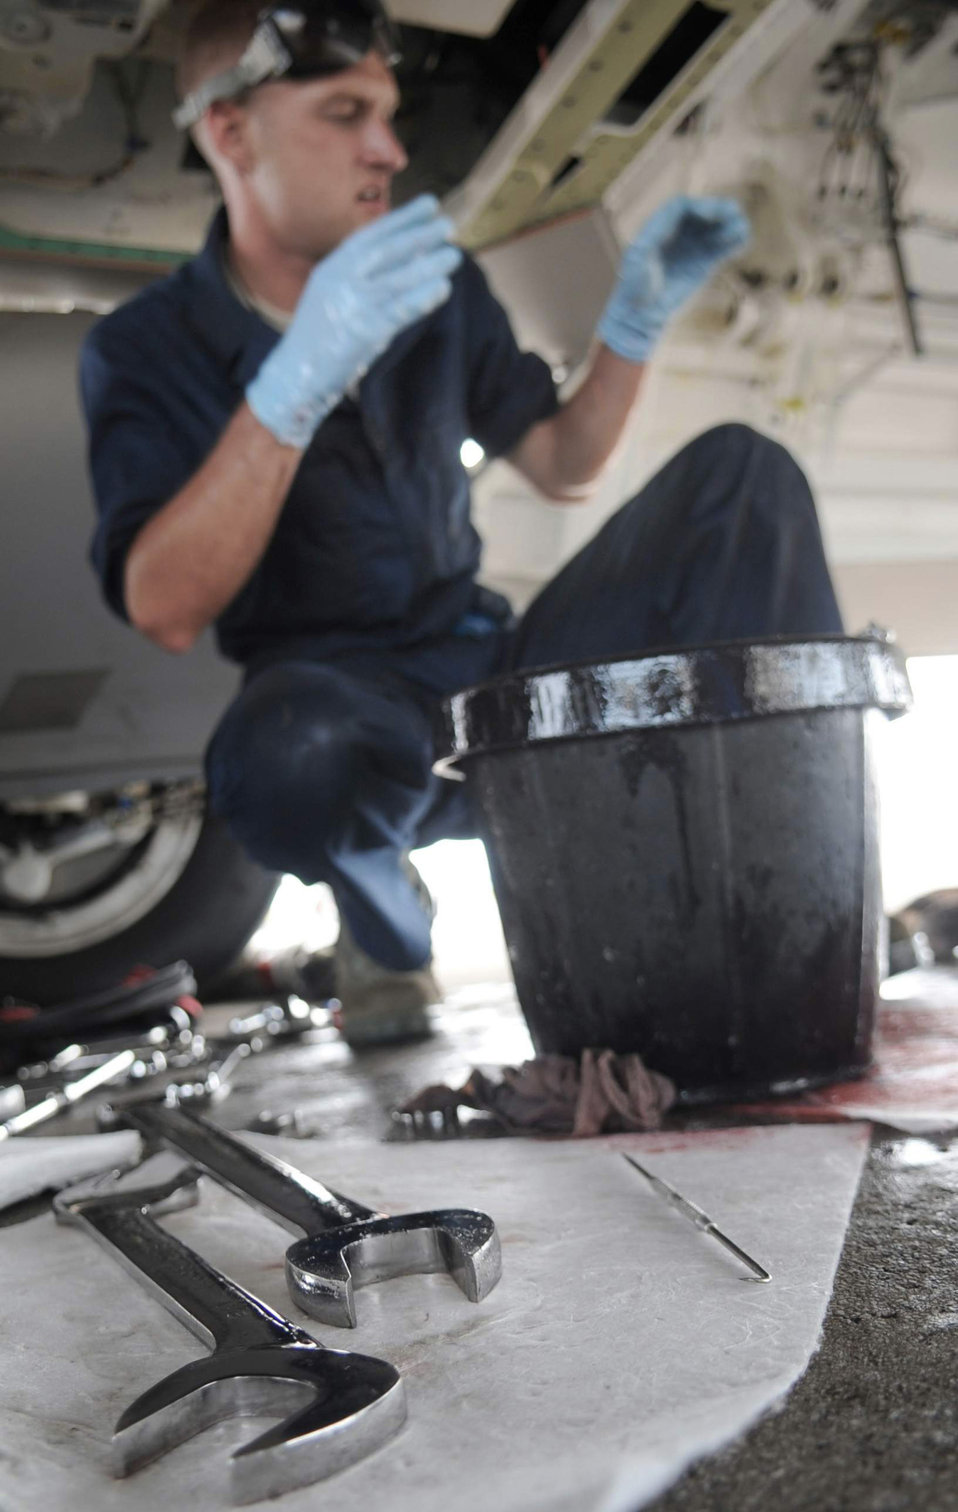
Maintainers keep F-22s ready in Guam

Staff Sgt. Jeremiah Smith, 525th Expeditionary Aircraft Maintenance Unit F-22 crew chief, works on the hydraulic pump of an F-22 Raptor June 3.